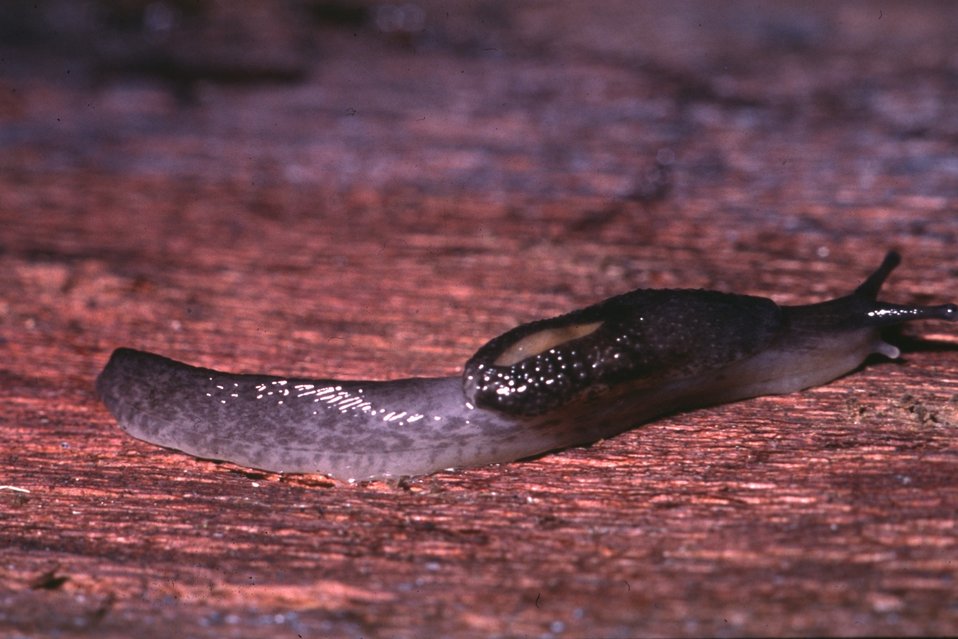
Hemphillia dromedarius, not a survey and manage species.